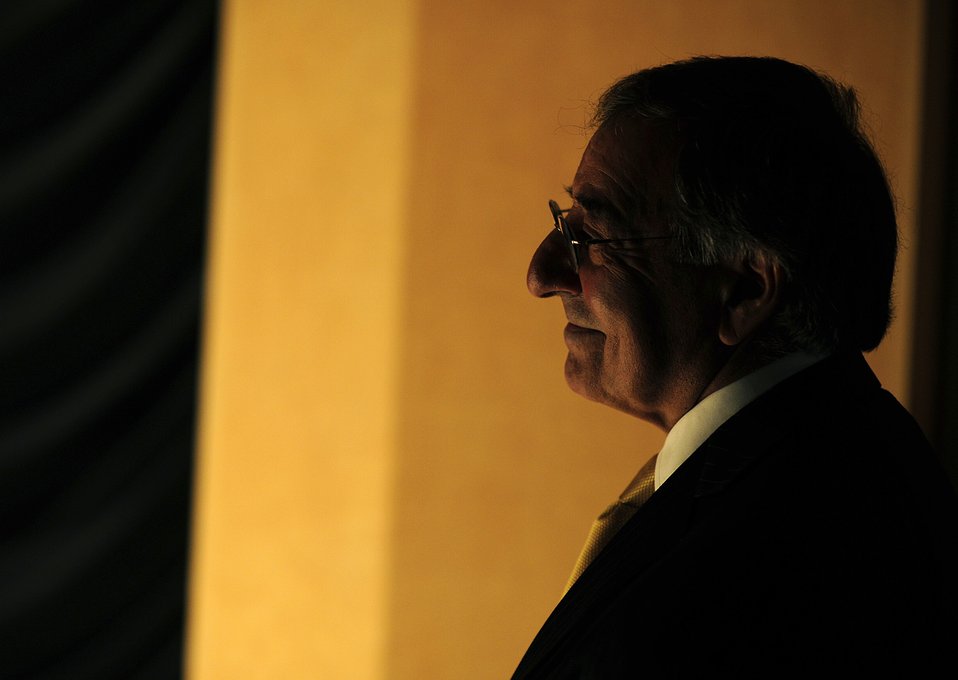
Secretary of Defense Leon E. Panetta delivers remarks Oct. 11, 2011, during an event hosted by the Woodrow Wilson International Center for Scholars at the Ronald Reagan Building and International Trade Center in Washington, D.C.